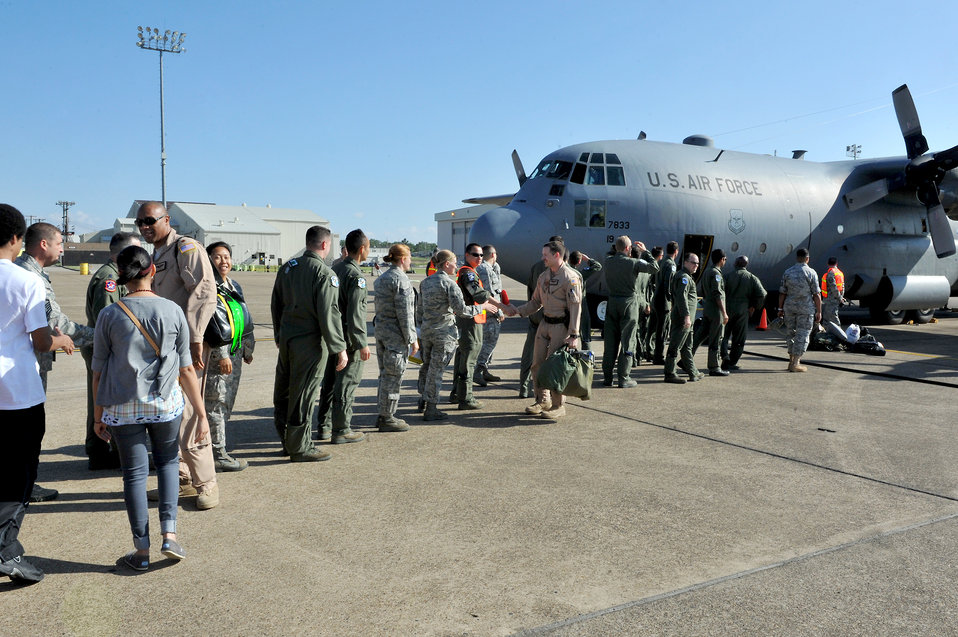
Returning home

Friends and family members gather May 13, 2011, at the flightline on Little Rock Air Force Base, Ark., to welcome home approximately 50 Airmen from support operations in Southwest Asia.